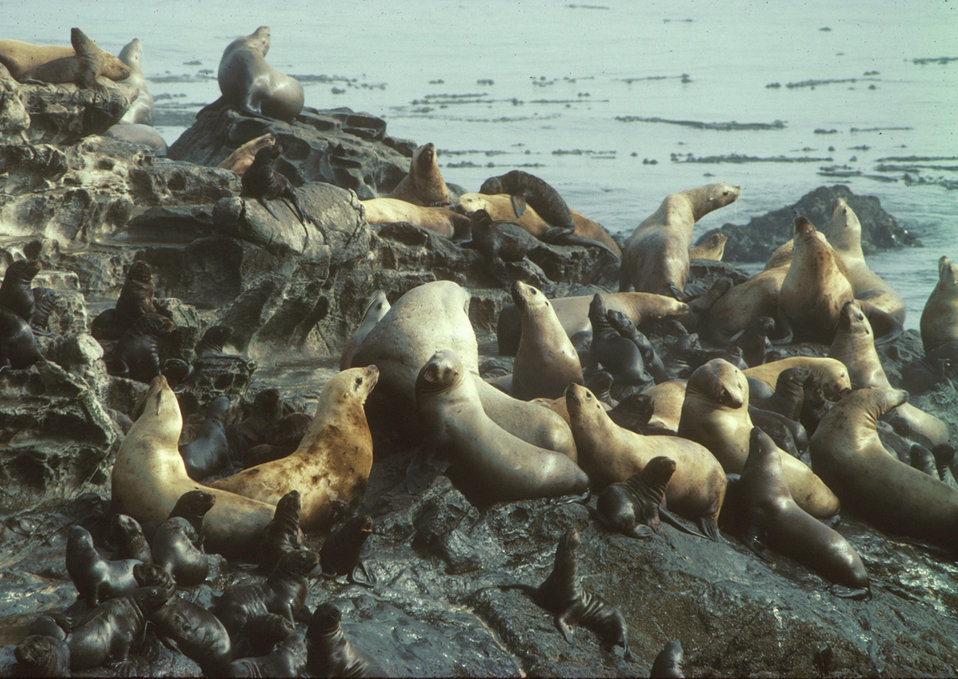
Steller Sea Lions

Steller Sea Lion Rookery on Pyramid Rock
Oregon Islands National Wildlife Refuge, OR
Pyramid Rock on the Rogue Reef Unit of Oregon Islands National Wildlife Refuge is the largest rookery for threatened Steller Sea Lions in U.S. waters south of Alaska.